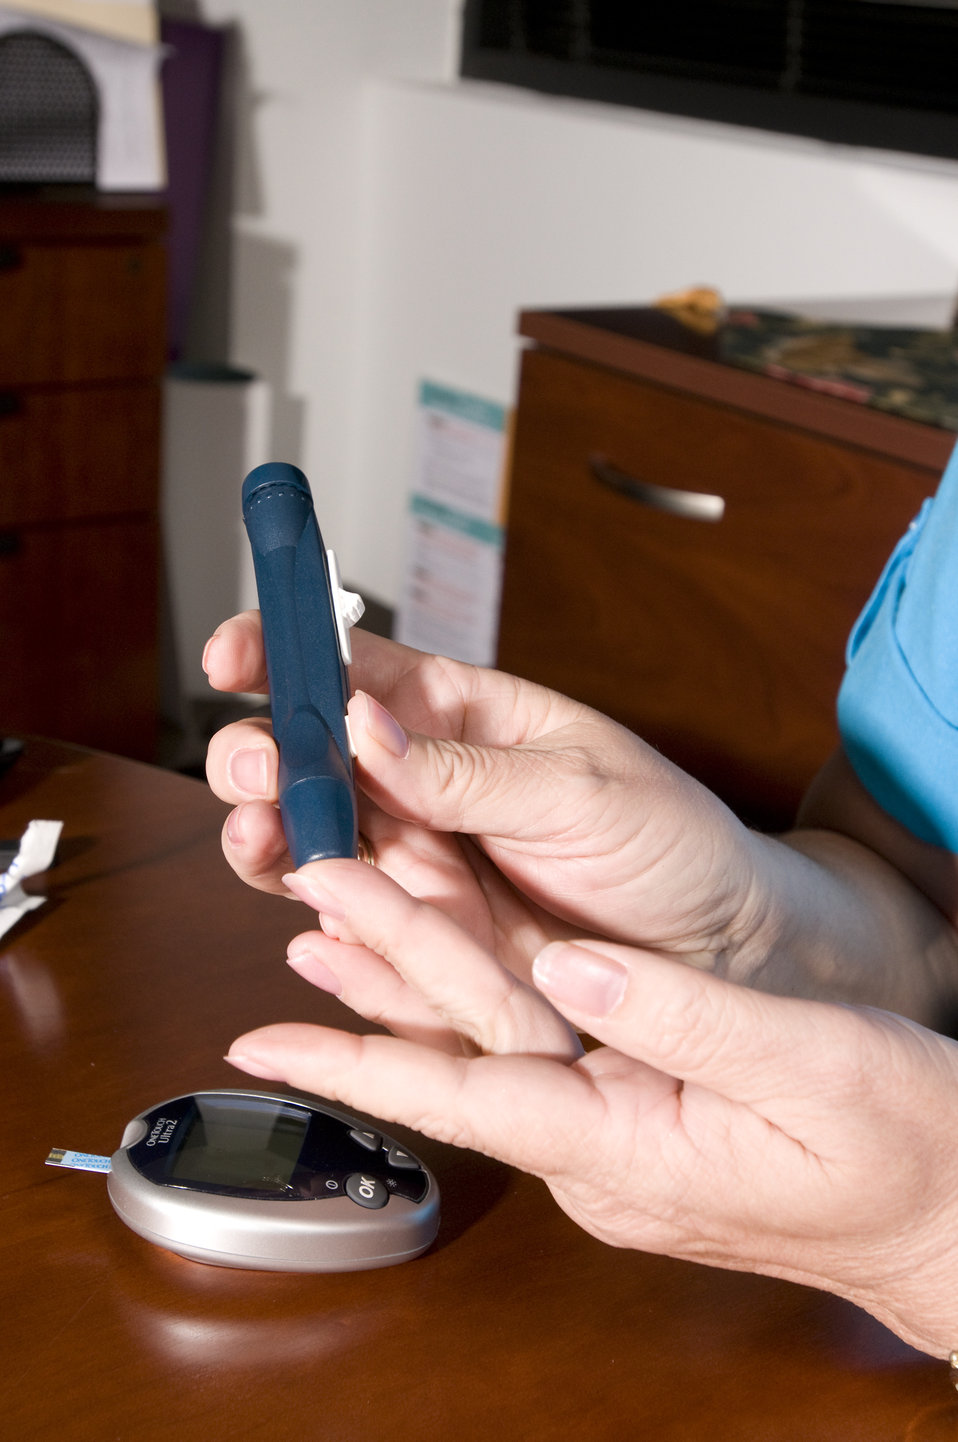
The woman pictured here, was about to check her blood glucose level. This process is known as self-monitoring blood glucose, and it's a way for people with diabetes to find out how much glucose is in their blood. A drop of blood from the fingertip is placed on a special coated strip of paper that 'reads' the amount of glucose in the blood. Many people use an electronic meter to get this reading. At this point, she was performing a controlled finger stick using a mechanized needle, which would very quickly, and relatively painlessly, penetrate the skin, thereby, inducing the delivery of a blood droplet, which could then be tested.